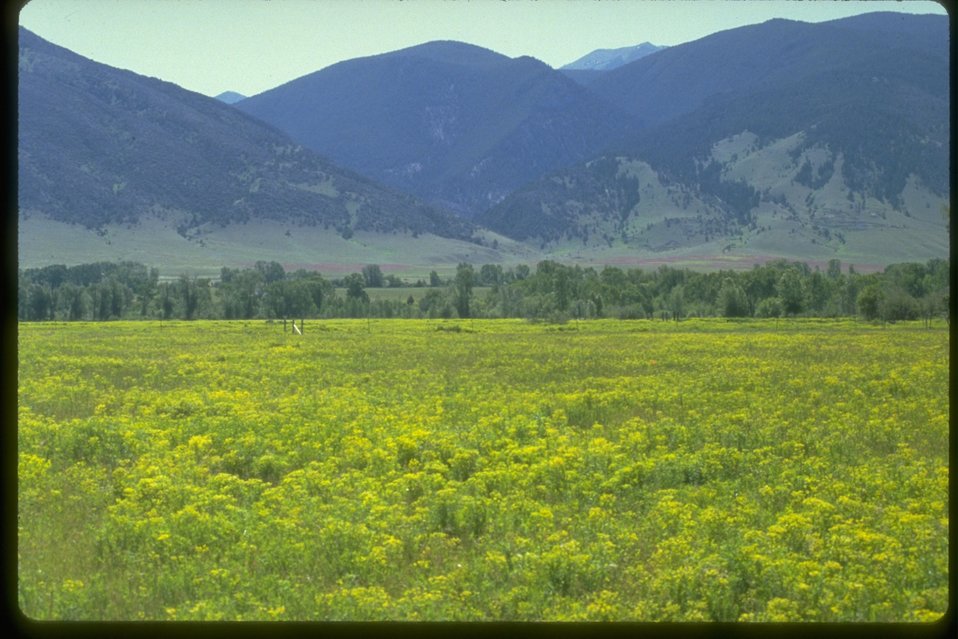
Leafy spurge in a valley.